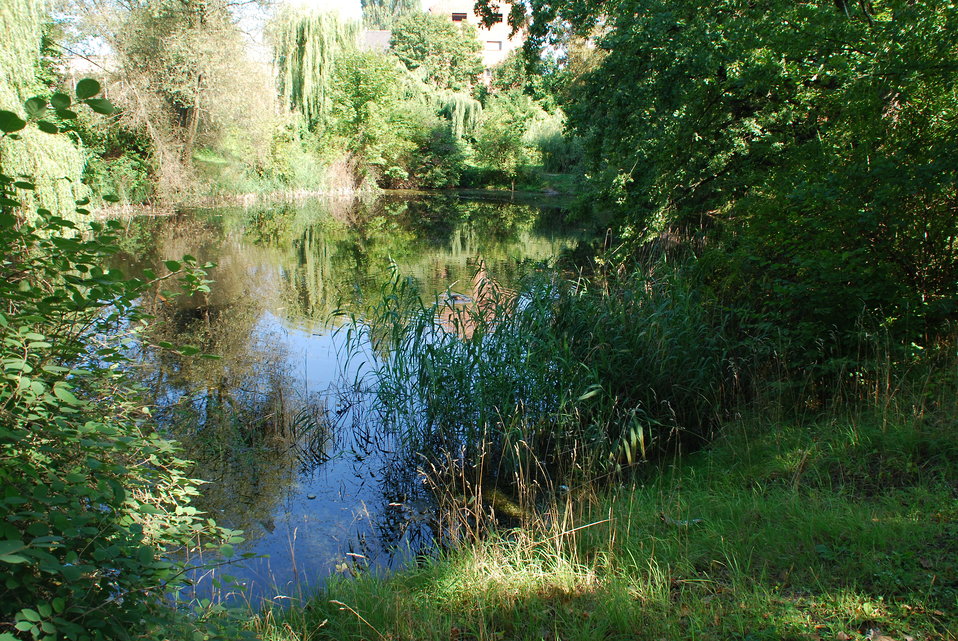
Theaterteich in Frankfurt (Oder), am ehemaligen Kleist-Theater, Friedrich-Ebert-Straße